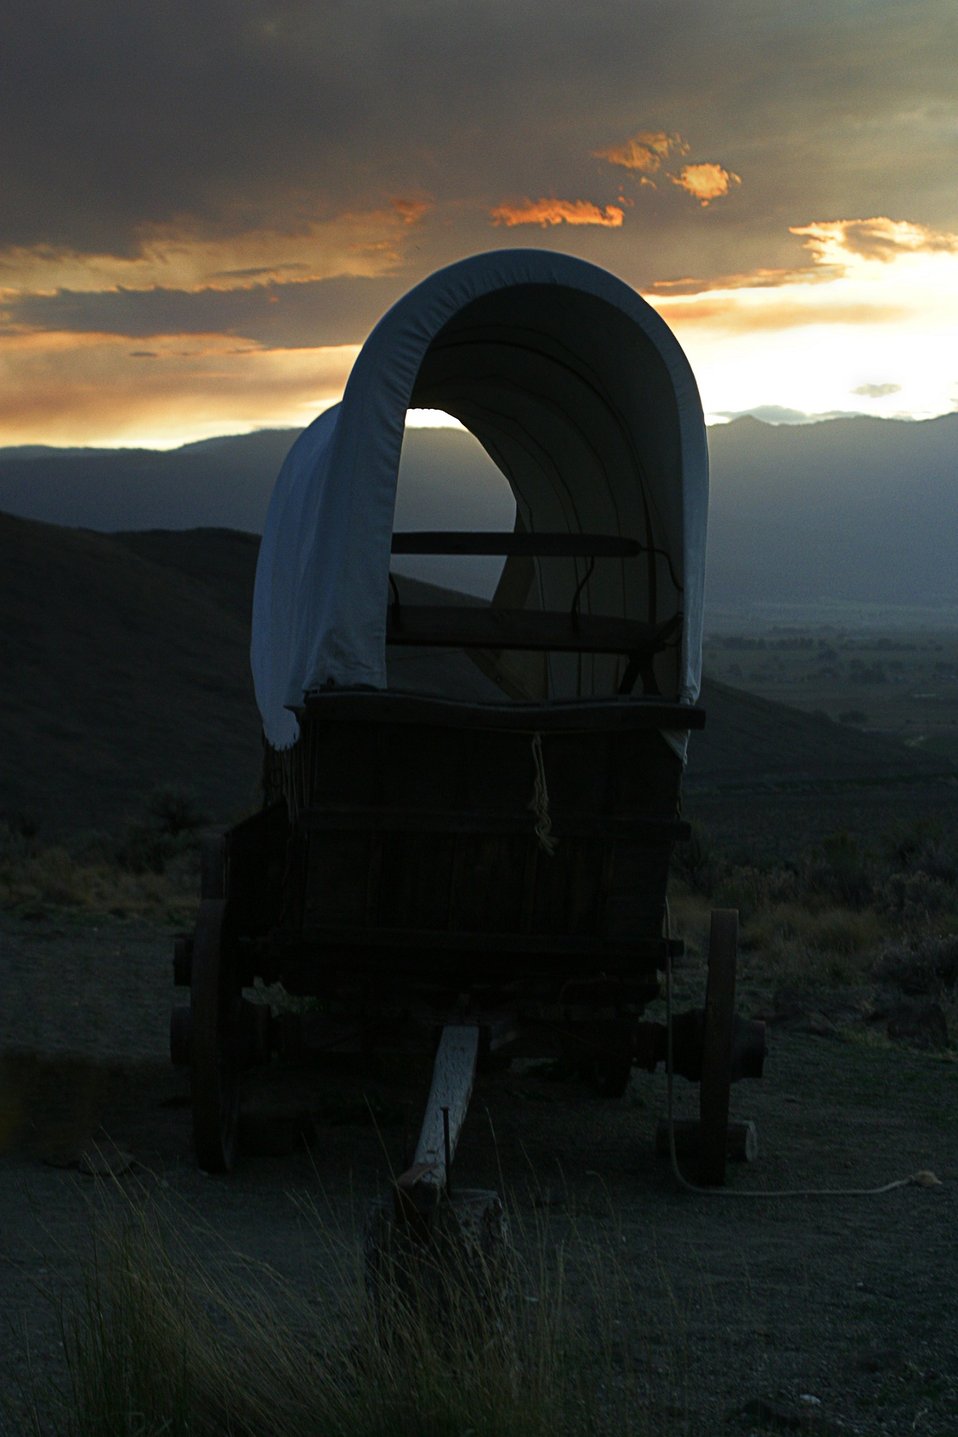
October sunset on wagon encampment at National Historic Oregon Trail Interpretive Center.